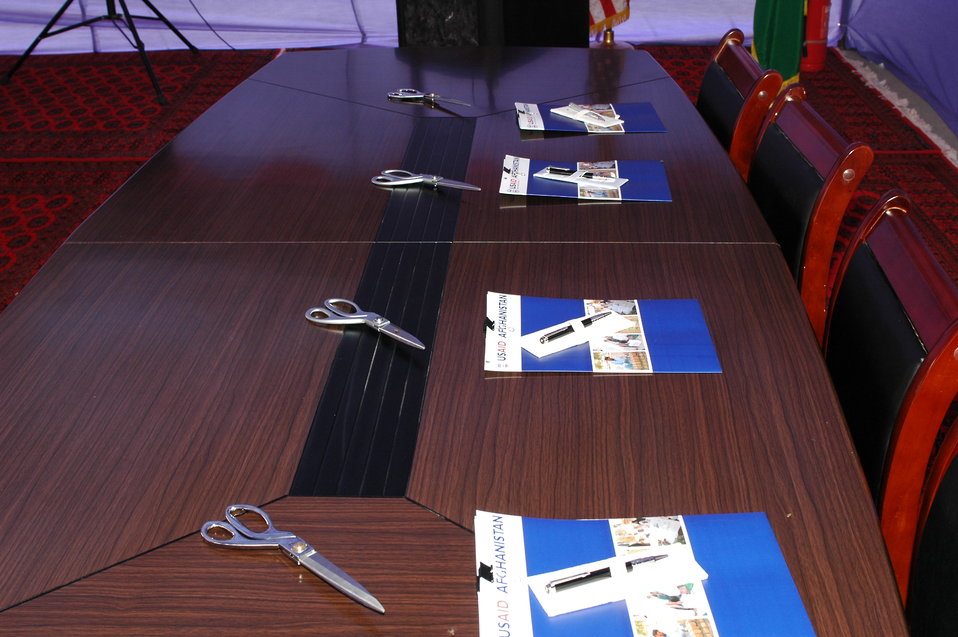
105 MW Tarakhil Power Plant Handover